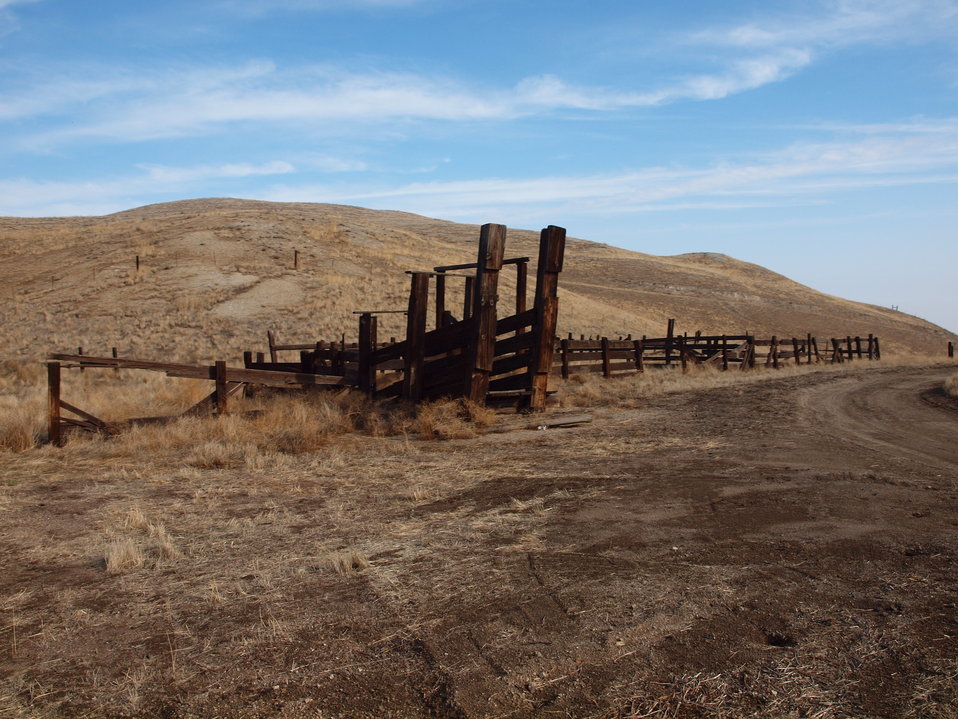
Corral.